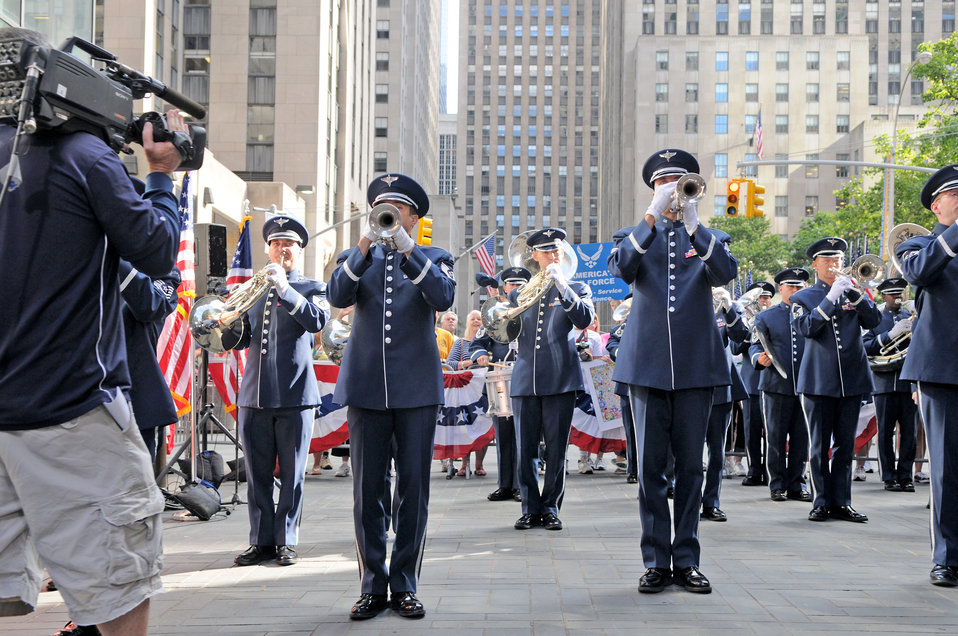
Band performs on 'Today' show

The Air Force Band's Ceremonial Brass group performs during a live broadcast on the